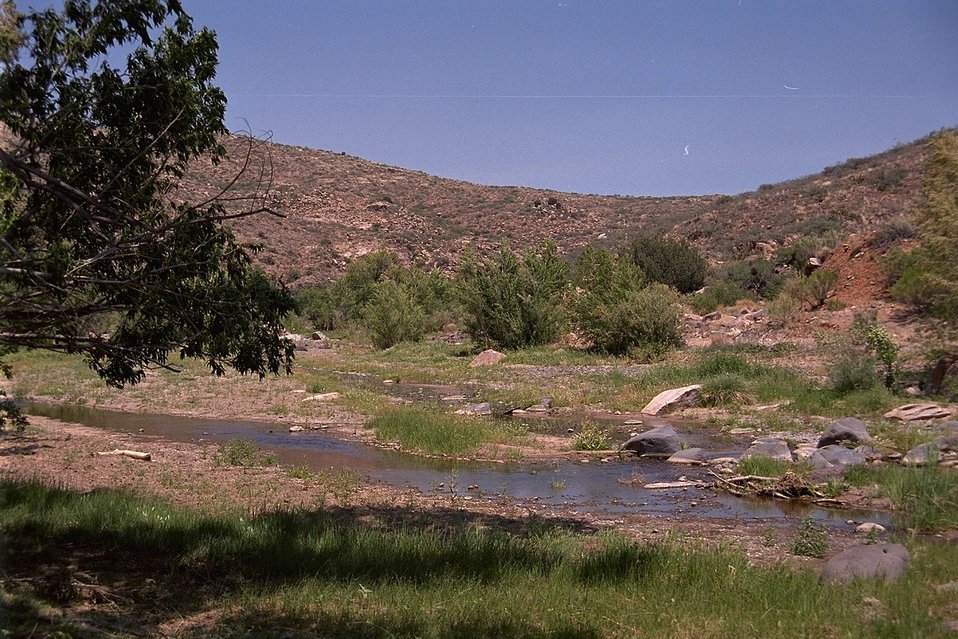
A pretty view of the Agua Fria River with a Tree to the left of the shot.